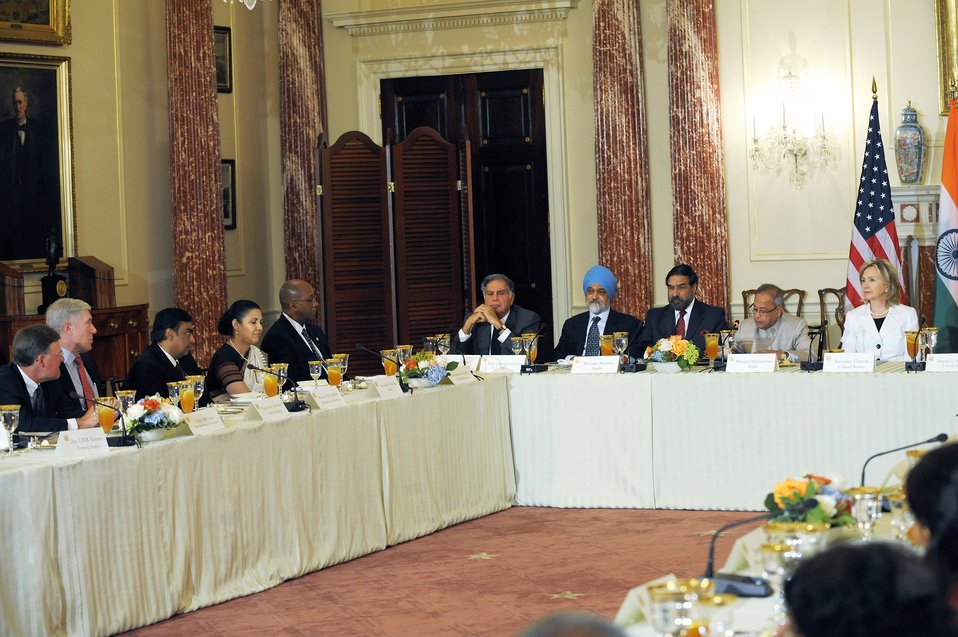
Secretary Clinton Delivers Opening Remarks

U.S. Secretary of State Hillary Rodham Clinton delivers the opening remarks at the U.S.-India CEO Forum at the U.S. Department of State on June 22, 2010.